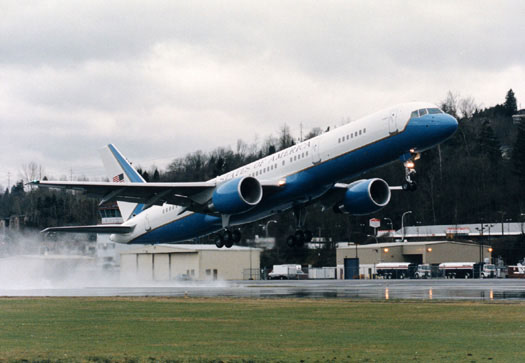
C-32

ANDREWS AIR FORCE BASE, Md. -- A C-32, a specially configured version of the Boeing 757-200 commercial intercontinental airliner, takes off here.